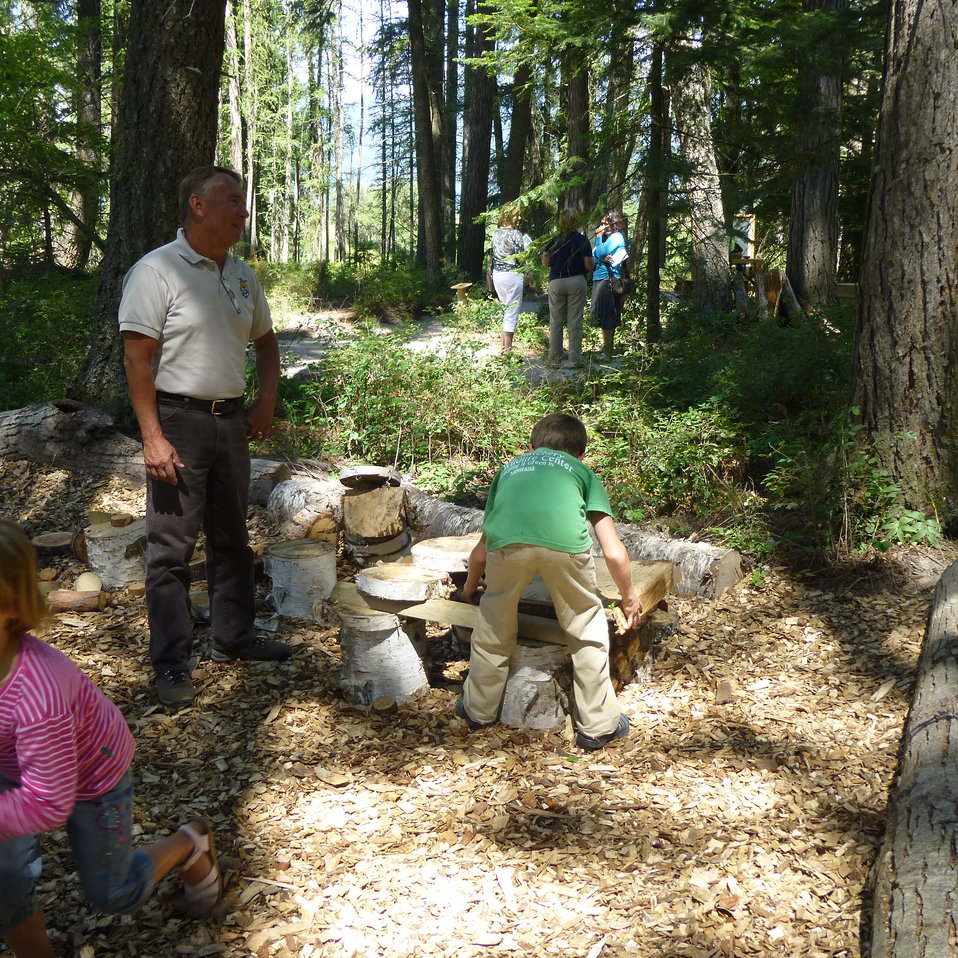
Creston's Nature Explore Outdoor Classroom

An employee at Creston's Outdoor Classroom watches his grandchildren build with tree cookies in the Mess Material Area.